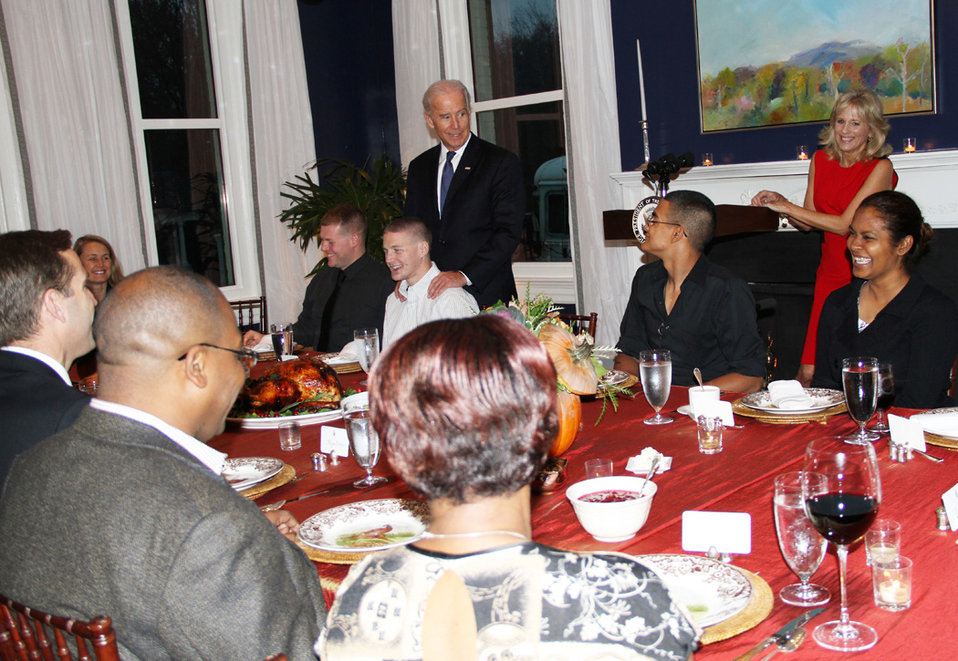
Bidens host holiday dinner for wounded warriors

Vice President Joe Biden and his wife, Dr. Jill Biden, enjoy spending time with service memberes and their families during a Thanksgiving dinner for wounded warriors in their home at the U.S. Naval Observatory in Washington, D.C., Nov. 21, 2011.